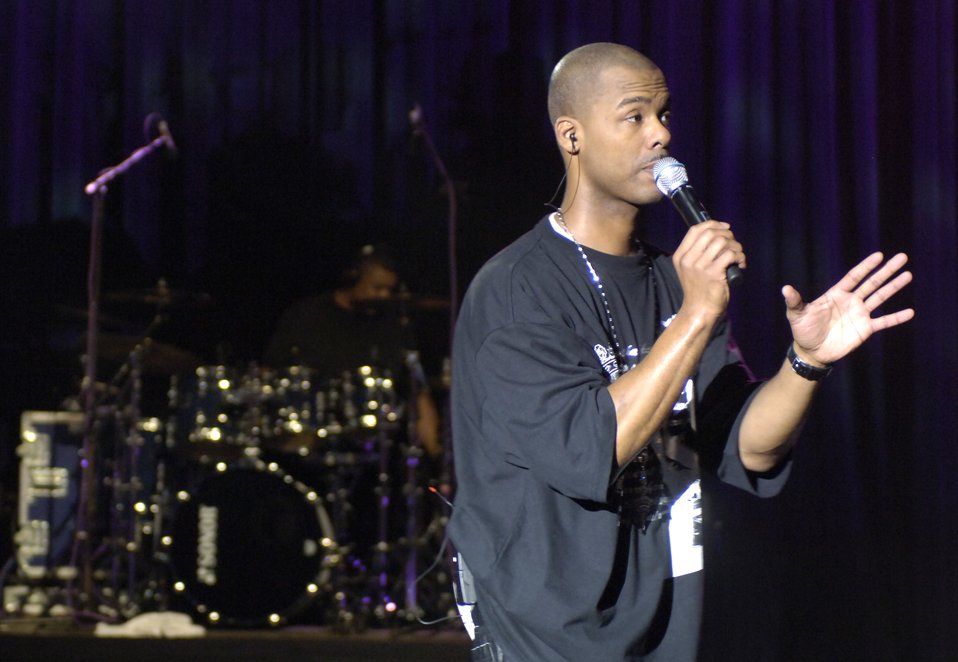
Sergeant takes Anti-drug battle personally

Technical Sgt. Aaron L. Miles, a vocalist with Reserve Generation, sings to third through seventh grade students attending an anti-drug concert Oct. 25 at Trinity University in San Antonio. The concert was part of National Red Ribbon Week, an anti-drug campaign focused on educating individuals, families and communities on the destructive effects of drugs and the positive alternative life choices that are available to youth. The 2006 Red Ribbon Week runs from Oct. 23 to 29. Reserve Generation is part of the Air Force Reserve Command Band at Robins Air Force Base, Ga.